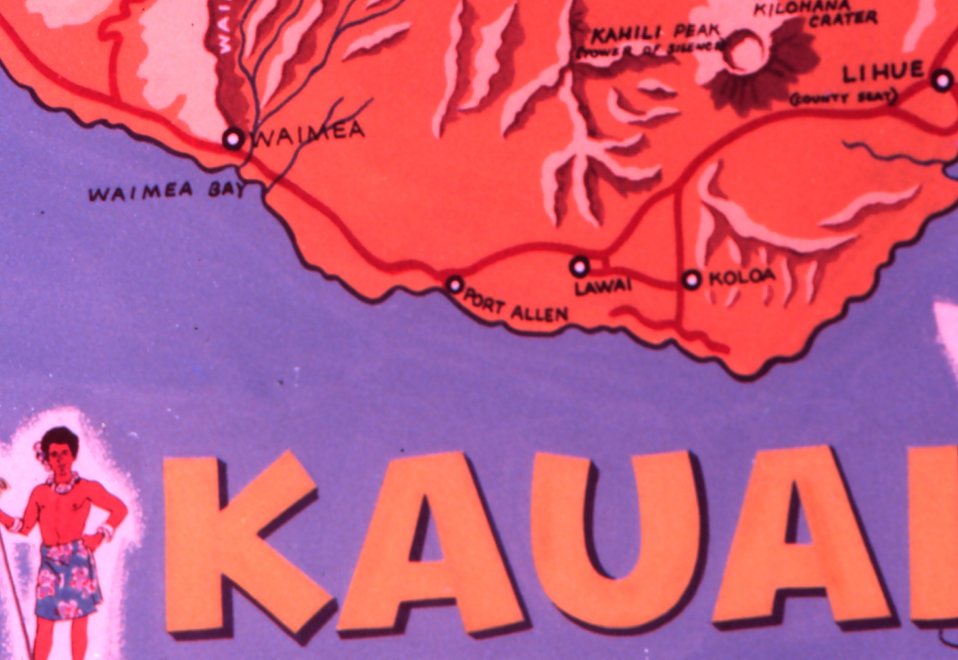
Kauai map